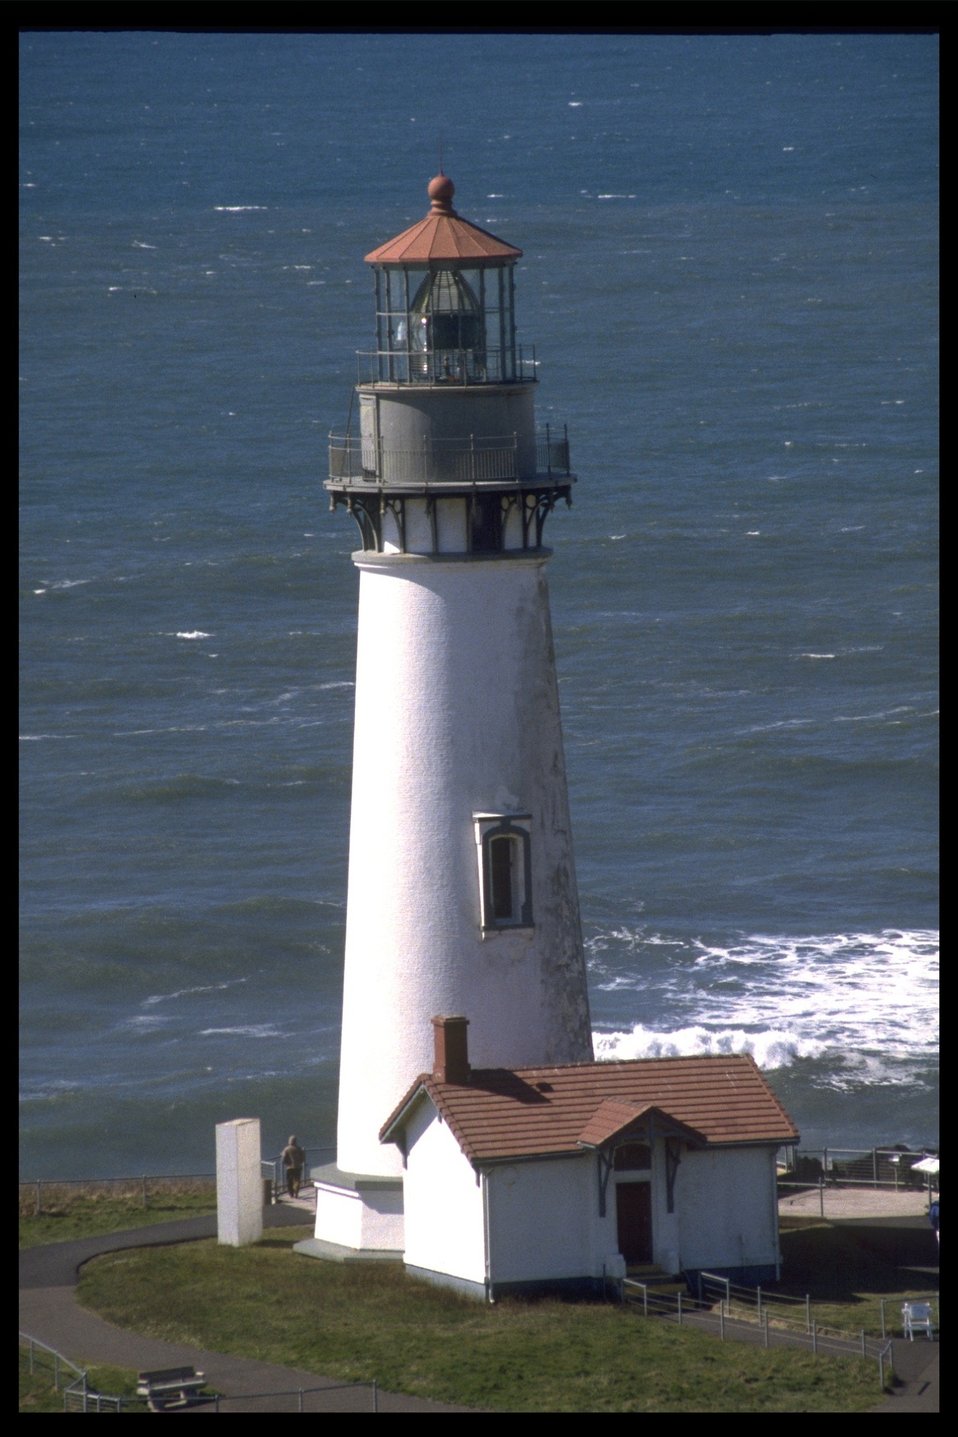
Yaquina Head Lighthouse.